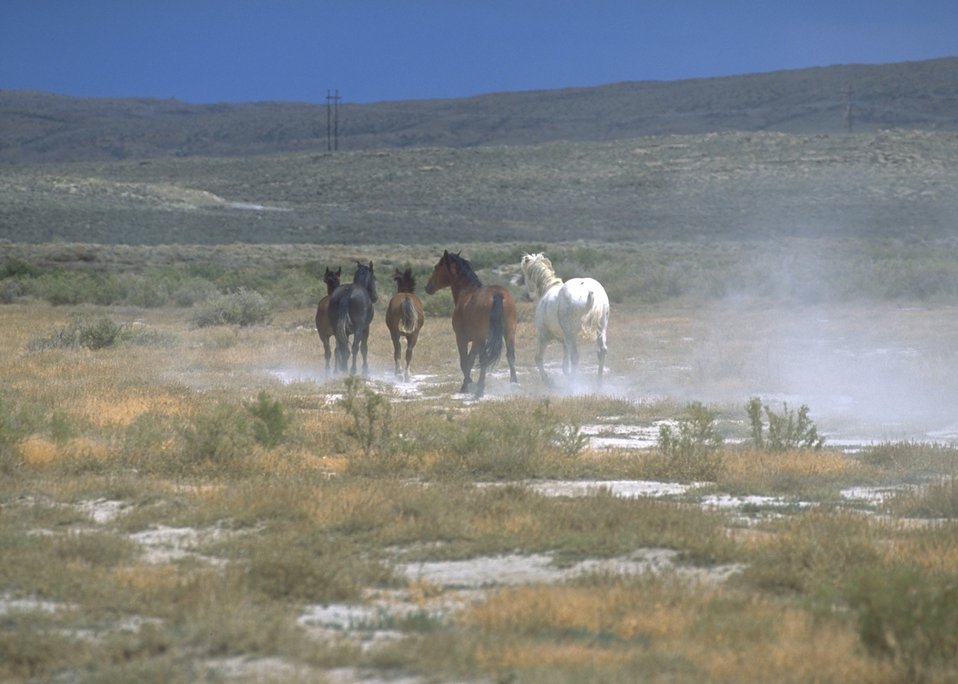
Wild horses, Rock Springs Field Office.